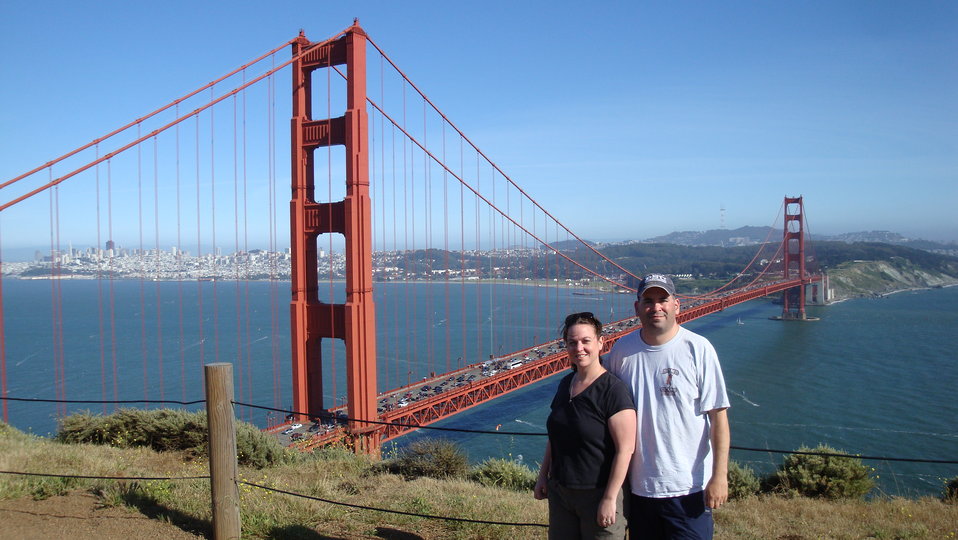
Jared Klein

Refuge Officer Jared Klein is a veteran of the Army Military Police Corps, serving from 1989 to 1993. After the Army, Jared attended Penn State University, joined NPS, and met his wife (Rebecca) who was a Captain in the US Army JAG Corps. In 2002, Jared became a Refuge Officer. He is currently assigned to the San Francisco Bay NWR Complex.